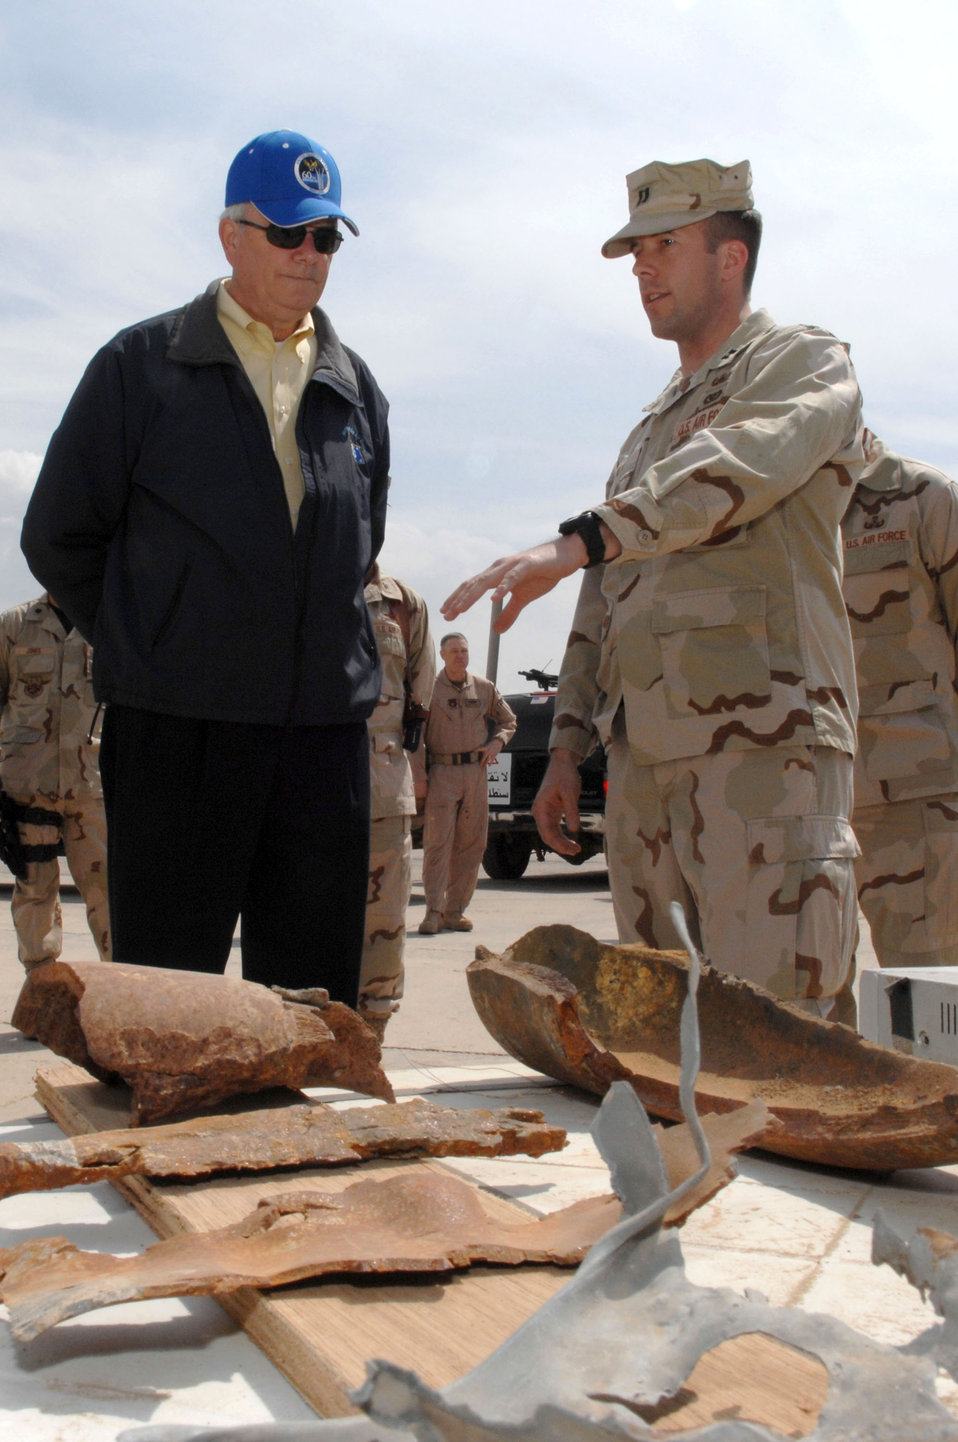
SECAF visits Airmen at Kirkuk

Capt. Joshua Tyler, the explosive ordnance disposal flight commander, explains to the Secretary of the Air Force, Michael W. Wynne, March 28, the different types of unexploded ordnances and improvised explosive devices that they encounter on a regular basis at Kirkuk Air Base in Iraq.